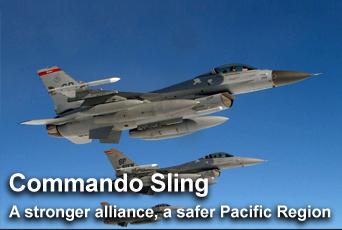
Commando Sling provides stronger alliance

Commando Sling is primarily an air-to-air combat exercise at Paya Lebar Air Base, Singapore. The goal of Commando Sling is a stronger alliance and a safer Pacific Region.